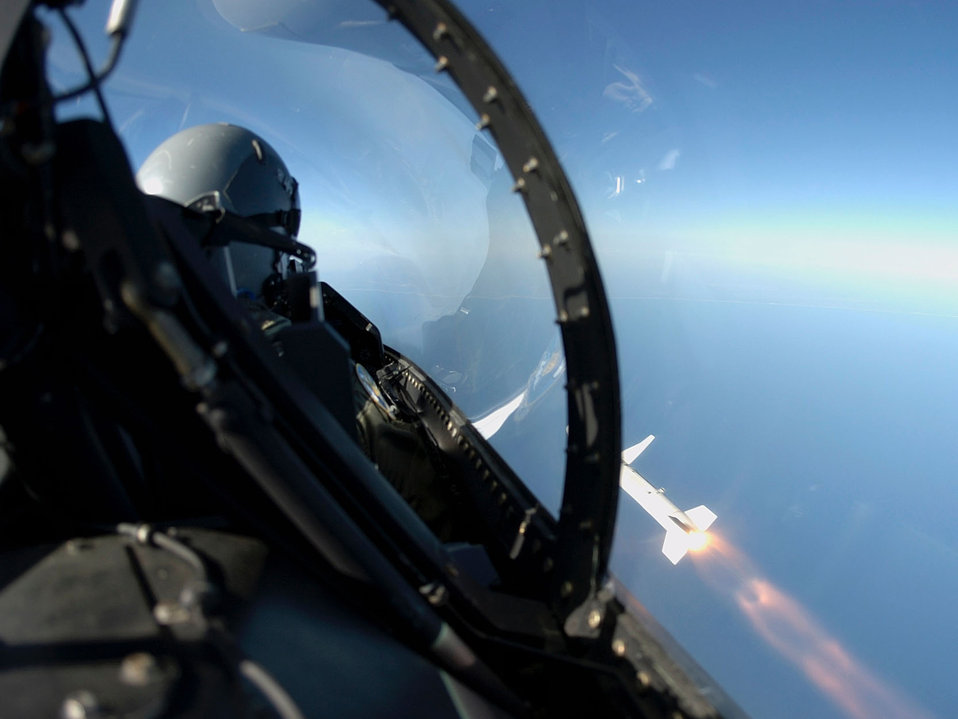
HARM launched

EGLIN AIR FORCE BASE, Fla. -- Maj. Matt Roberson, an F-16 Fighting Falcon pilot assigned to the 85th Test and Evaluation Squadron here, watches his AGM-88 high-speed antiradiation missile race past the cockpit after he fired it at a target during a test mission here March 24. The HARM is an air-to-surface missile designed to seek and destroy enemy radar-equipped air defense systems.